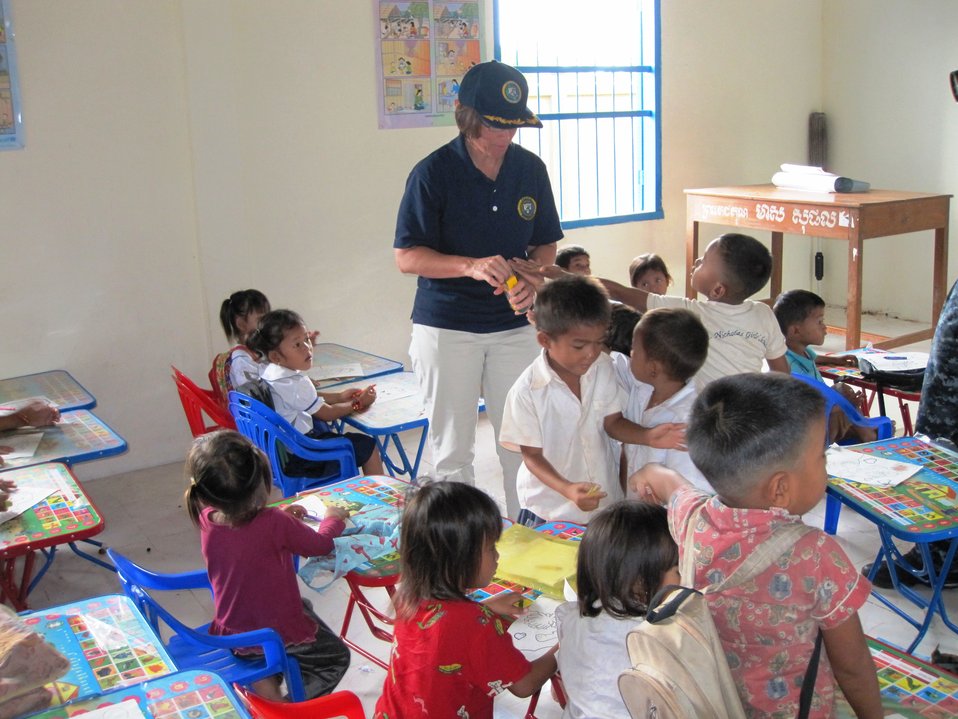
Commodore Franchetti Engages With Cambodian Children

U.S. Navy Commodore Franchetti engages with preschool children at Otres Primary School, a Pacific Partnership 2010 community service project, outside of Sihanoukville, Cambodia, on June 22, 2010.